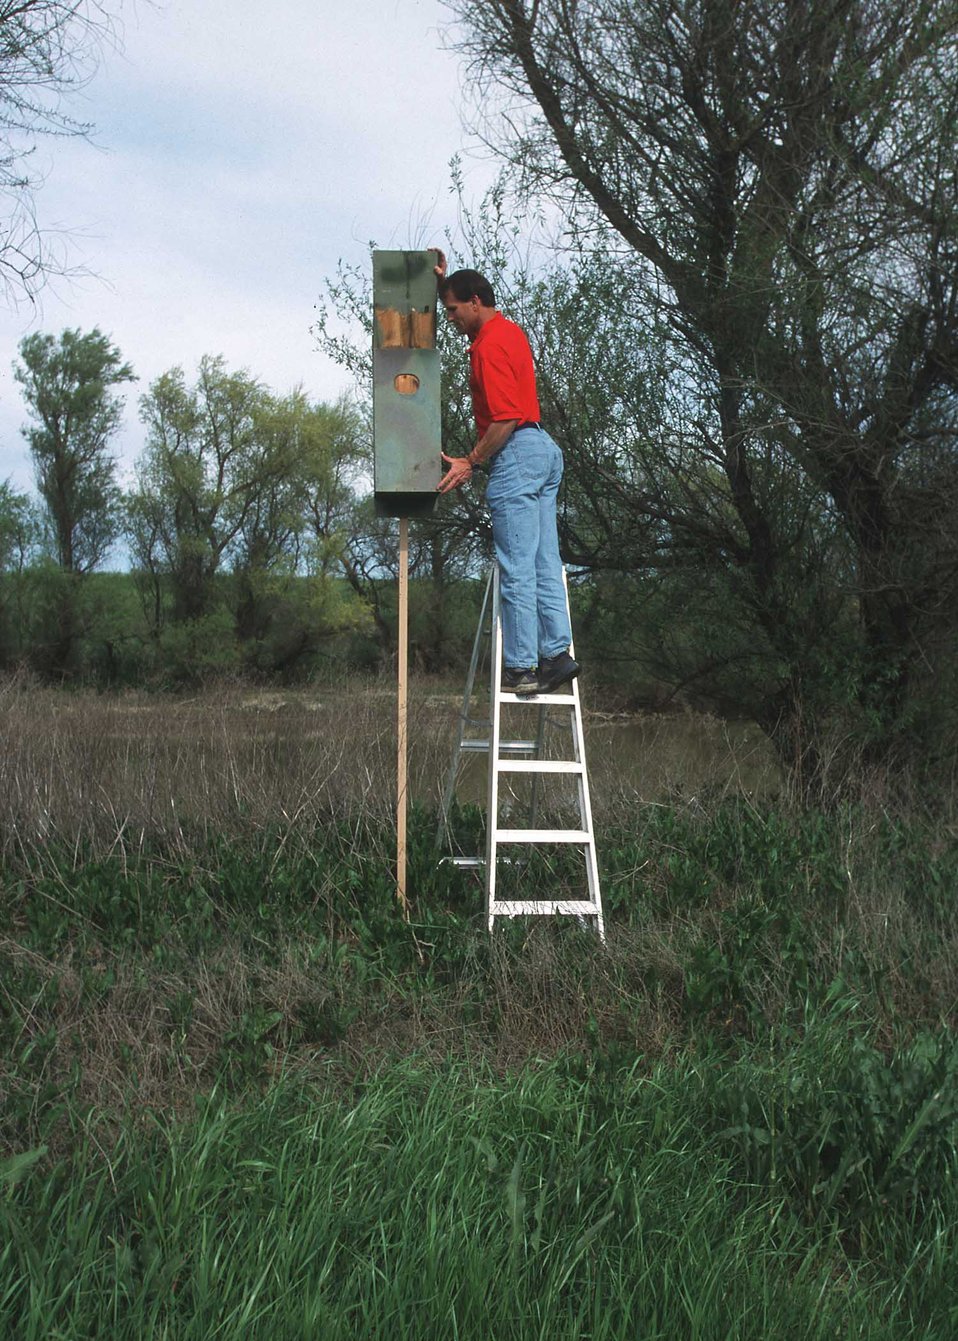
NRCS conservationist checks a birdhouse near a restored wetland area.